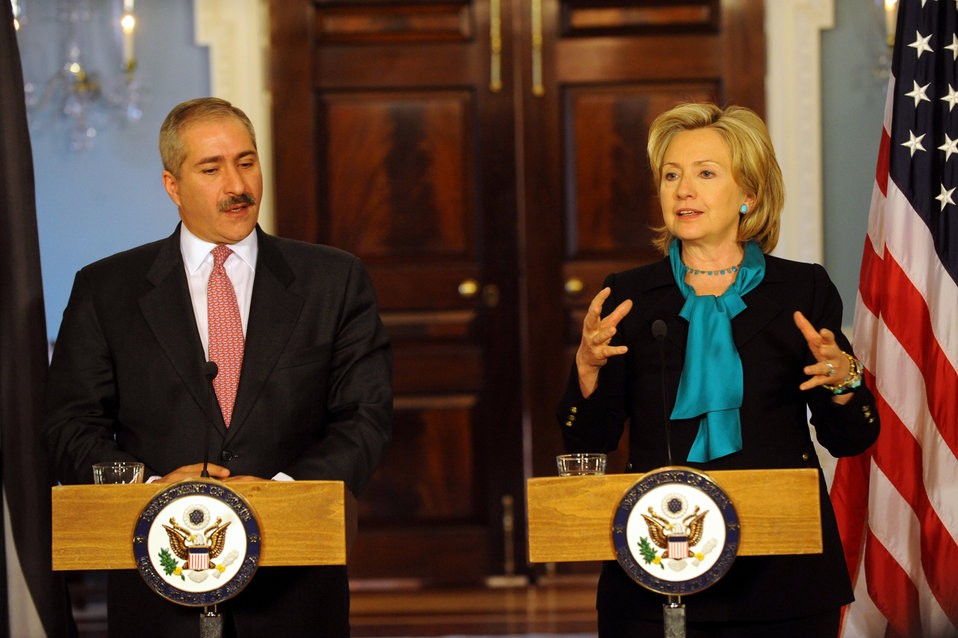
Secretary Clinton Meets With Jordanian Foreign Minister

U.S. Secretary of State Hillary Rodham Clinton holds a bilateral meeting with His Excellency Nasser Judeh, Foreign Minister of Jordan, at the Department of State in Washington, DC January 8, 2010.